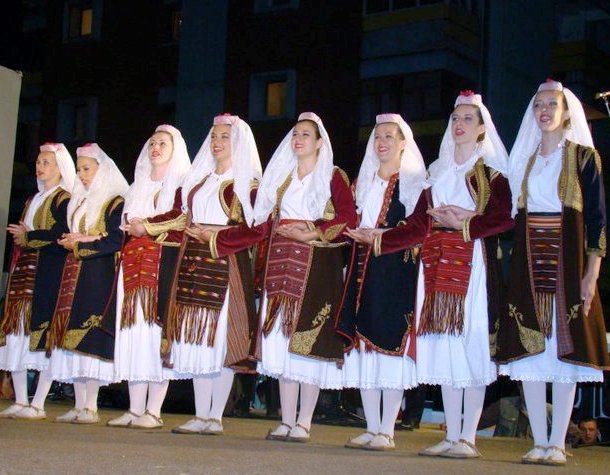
Српски / srpski: Snimak: Radosav Stojanović